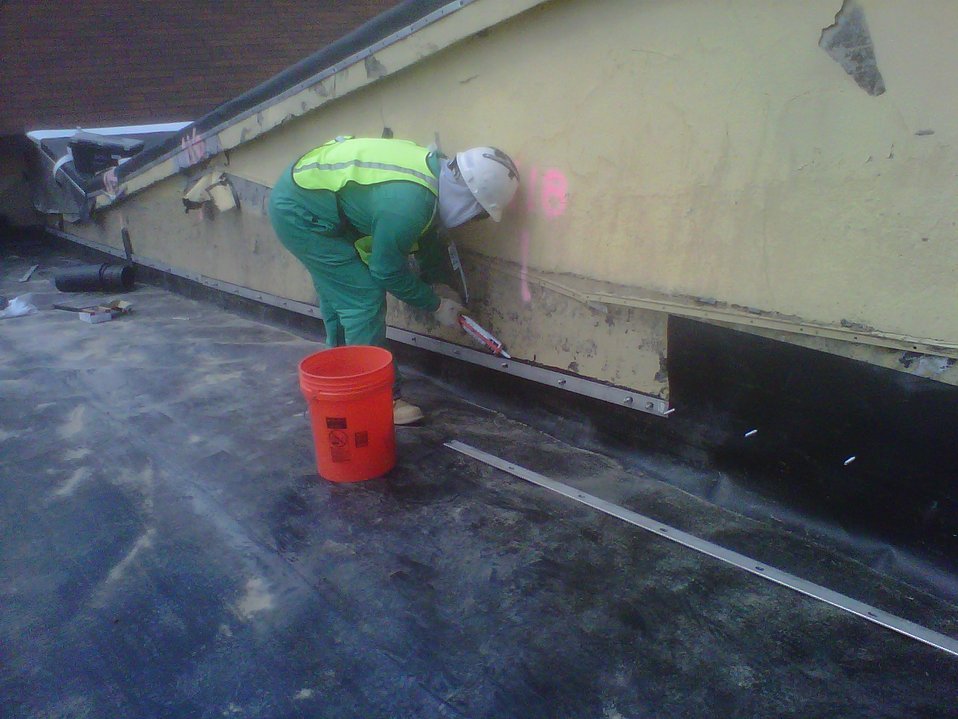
Brookhaven Recovery Act Workers Install Cap, Advance Reactor Decommissioning

Recovery Act workers install a portion of the impermeable cap at the Brookhaven Graphite Research Reactor.

Recovery Act workers completed the installation of an impermeable cap over the grounds of a reactor building at Brookhaven National Laboratory (BNL) to prevent rain and other moisture from infiltrating radiologically contaminated soil. Installation of the cap is part of broader Recovery Act work at BGRR that involves decommissioning the reactor.